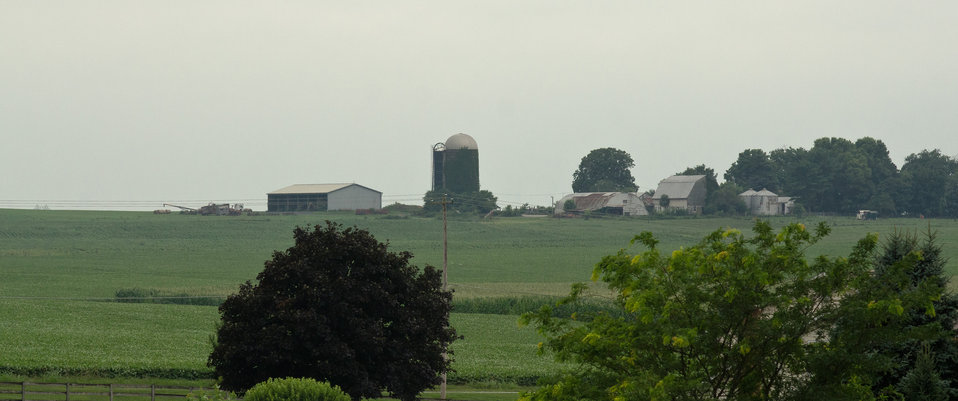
Nick’s Organic Farm, in Adamstown, MD, on Friday, July 12, 2013. The farm, owned by Nick Maravell, produces Black Angus beef, chicken, turkey, eggs, hay, soybeans, corn, alfalfa, orchard grass, rye; and other crops. The cattle are100% grass-fed receiving certified organic pasture, certified organic hay (in winter), water and mineral salts mixed with sea kelp. The cattle are not fed hormones, antibiotics or animal products. Poultry feed from grain is ground from organic grain. The poultry also graze on organic pastures. The farm has conducted on-farm research with federal, state and non-profit agencies to refine organic practices.